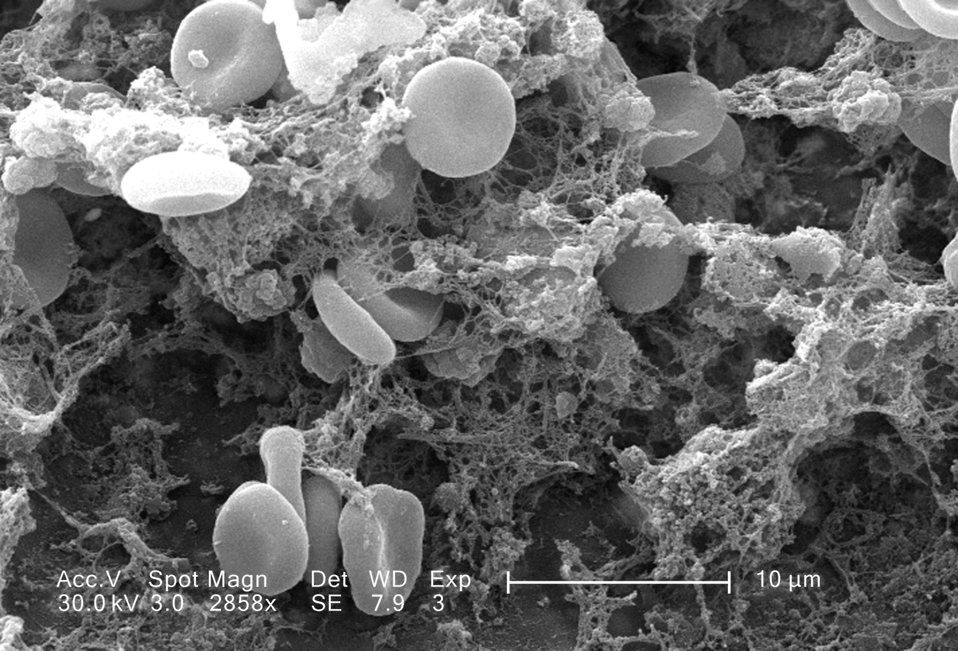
This scanning electron micrograph (SEM) depicted a number of red blood cells found enmeshed in a fibrinous matrix on the luminal surface of an indwelling vascular catheter; Magnified 2858x.